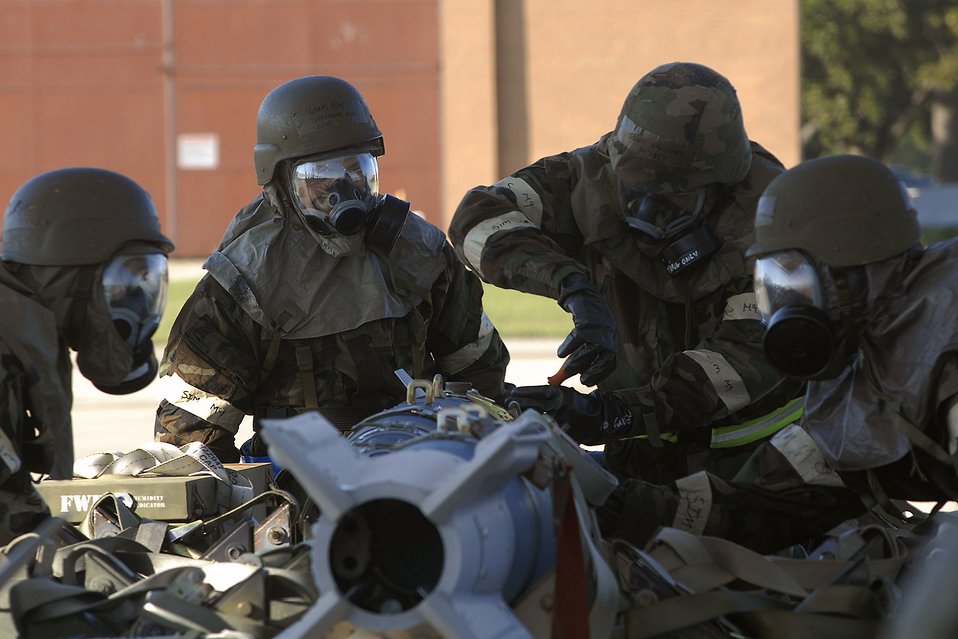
Connect this wire

Airmen from the 169th Fighter Wing prepare to load ordnance on an F-16 Fighting Falcon Oct. 3 during an operational readiness evaluation at McEntire Joint National Guard Base, S.C. The evaluation determines a unit's ability to launch missions while in a chemical warfare environment.